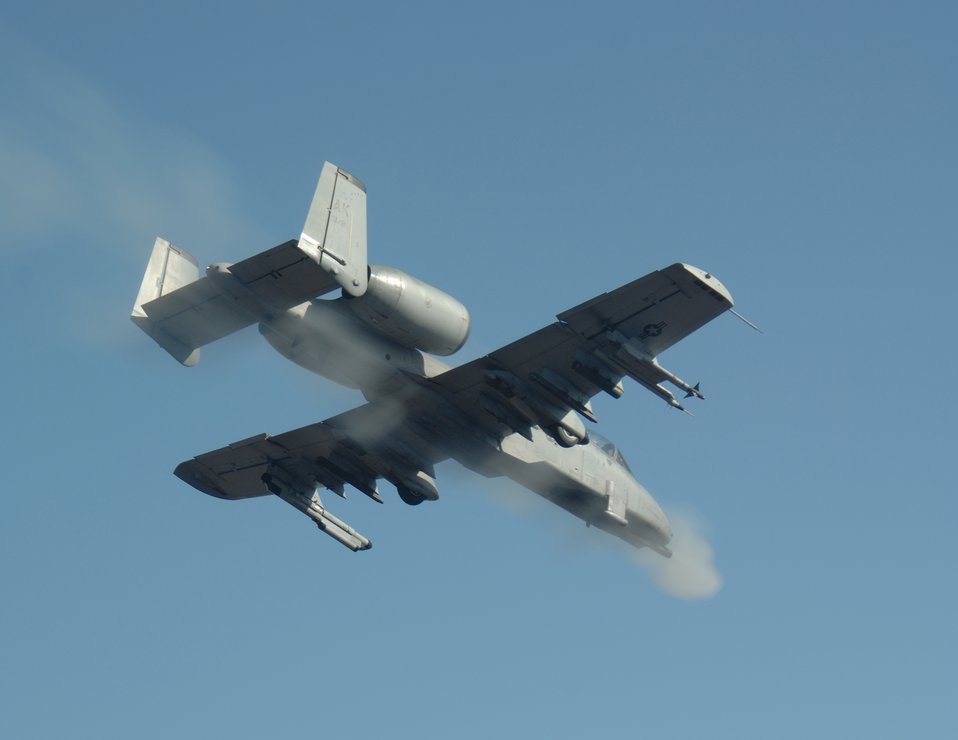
Thunder and lightning

Capt. Dustin Ireland fires the GAU-8 from an A-10 Thunderbolt II April 24 over the Pacific Alaska Range Complex during live-fire training. Captain Ireland is an A-10 pilot from the 355th Fighter Squadron from Eielson Air Force Base, Alaska. Members from the 355th FS are tasked to provide mission ready A-10s and a search and rescue capability, in Alaska and deployed sites worldwide.